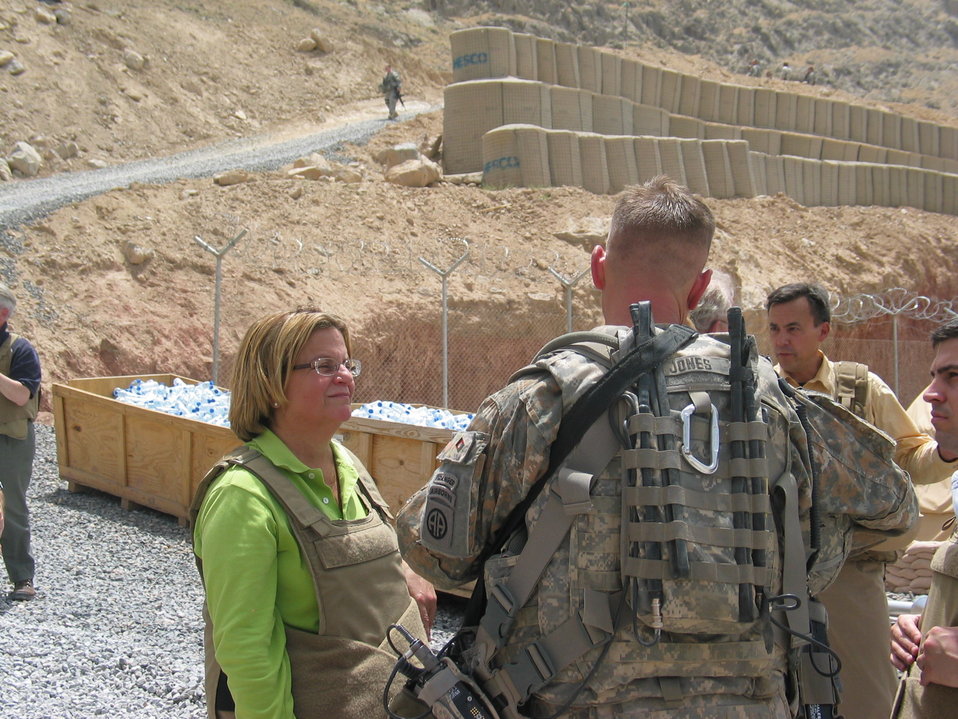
CODEL Berman